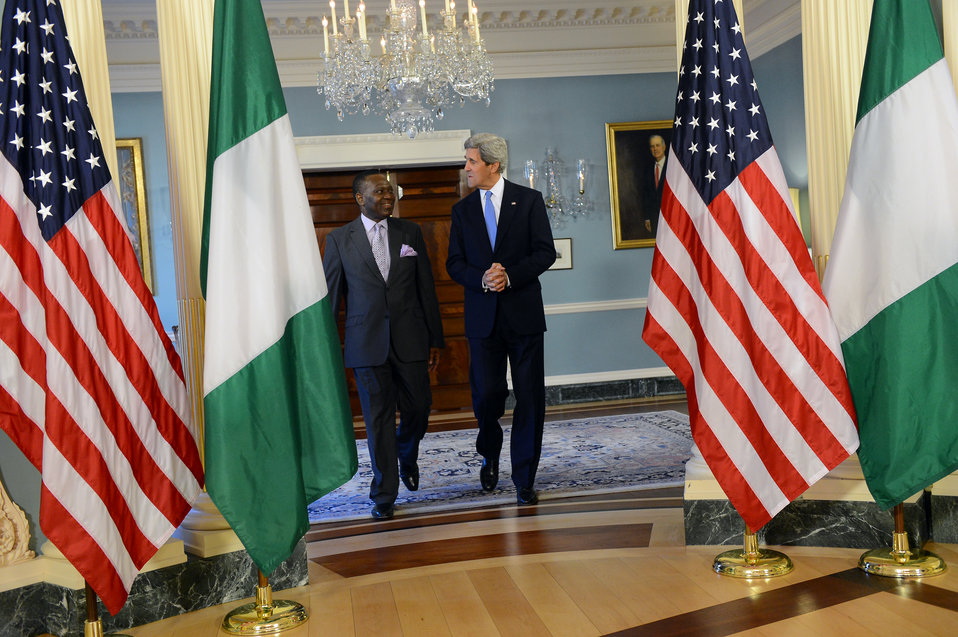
Secretary Kerry Meets With Nigerian Foreign Minister Ashiru

U.S. Secretary of State John Kerry meets with Nigerian Foreign Minister Olugbenga Ashiru at the U.S. Department of State in Washington, D.C., on April 25, 2013.